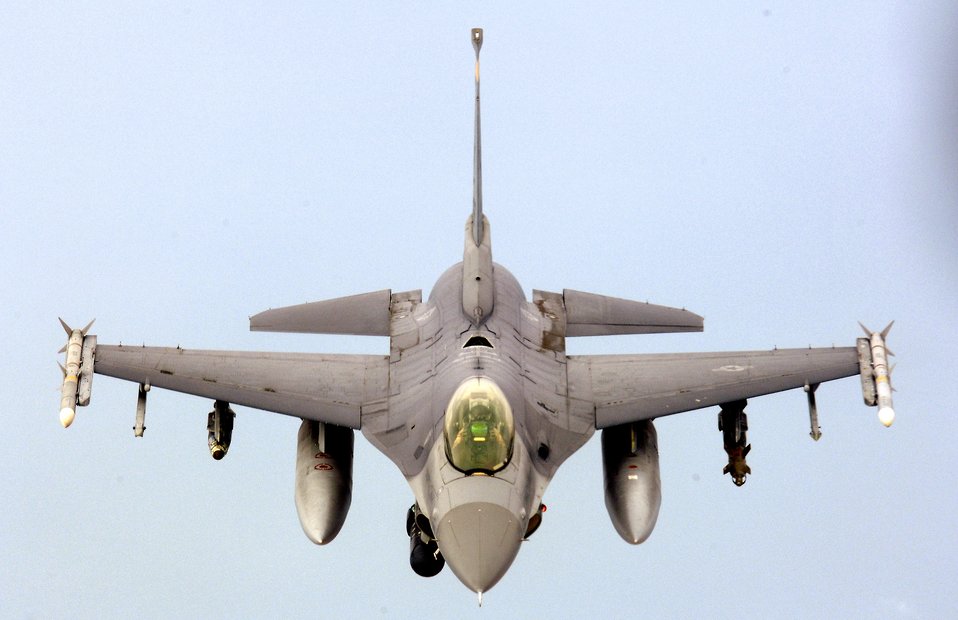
Air Force convenes board to examine F-16 crash

Air Force officials have convened an investigative board to look into the crash of an F-16 Fighting Falcon similar to this one that was engaged in combat operations over Iraq Nov. 27.